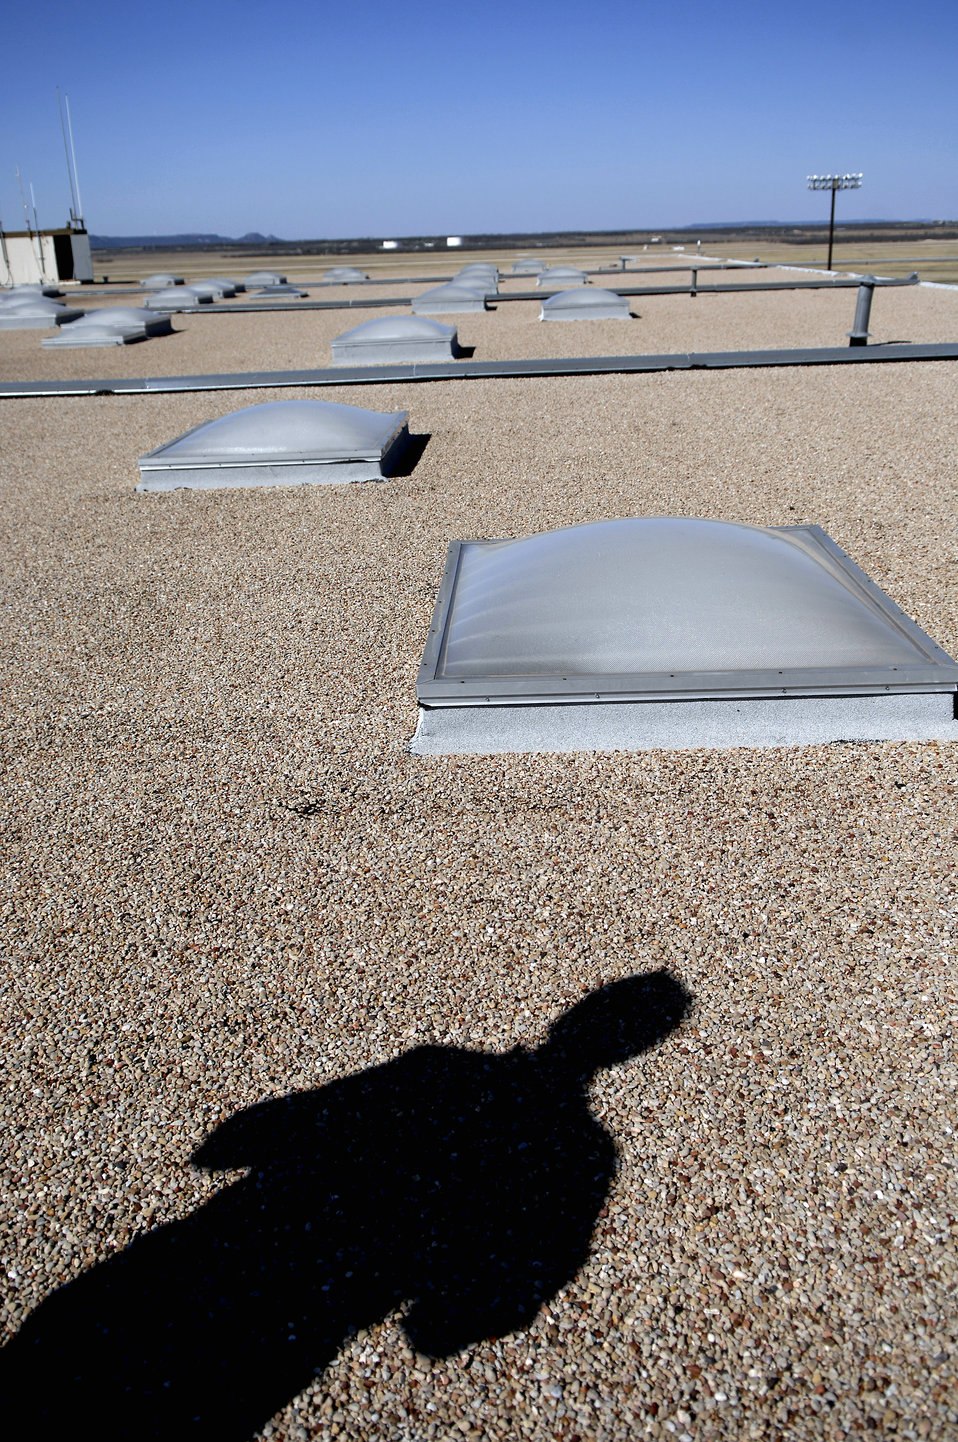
Dyess AFB model of energy conservation

A solar day lighting system, consisting of more than 100 five- by six-foot panels integrated with the electric lighting, is being used to reduce the electric load in ten buildings at Dyess Air Force Base, Texas. The base environmental office implemented several energy-efficient programs as part of their go-green initiative and improved cost-efficiency.